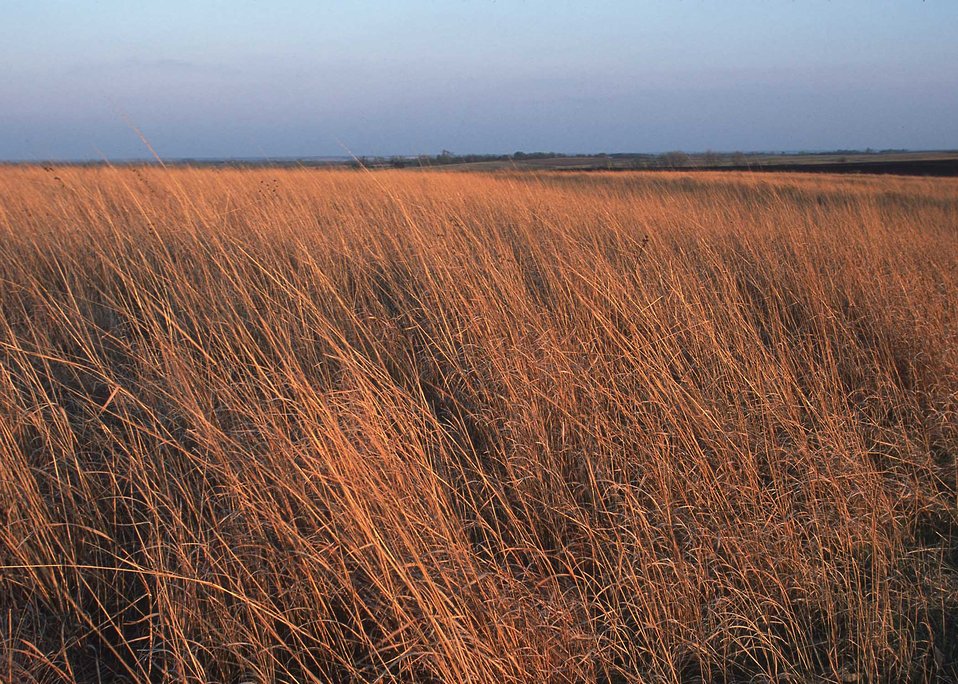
Prairie species seeded under the Conservation Reserve Program. Kansas.